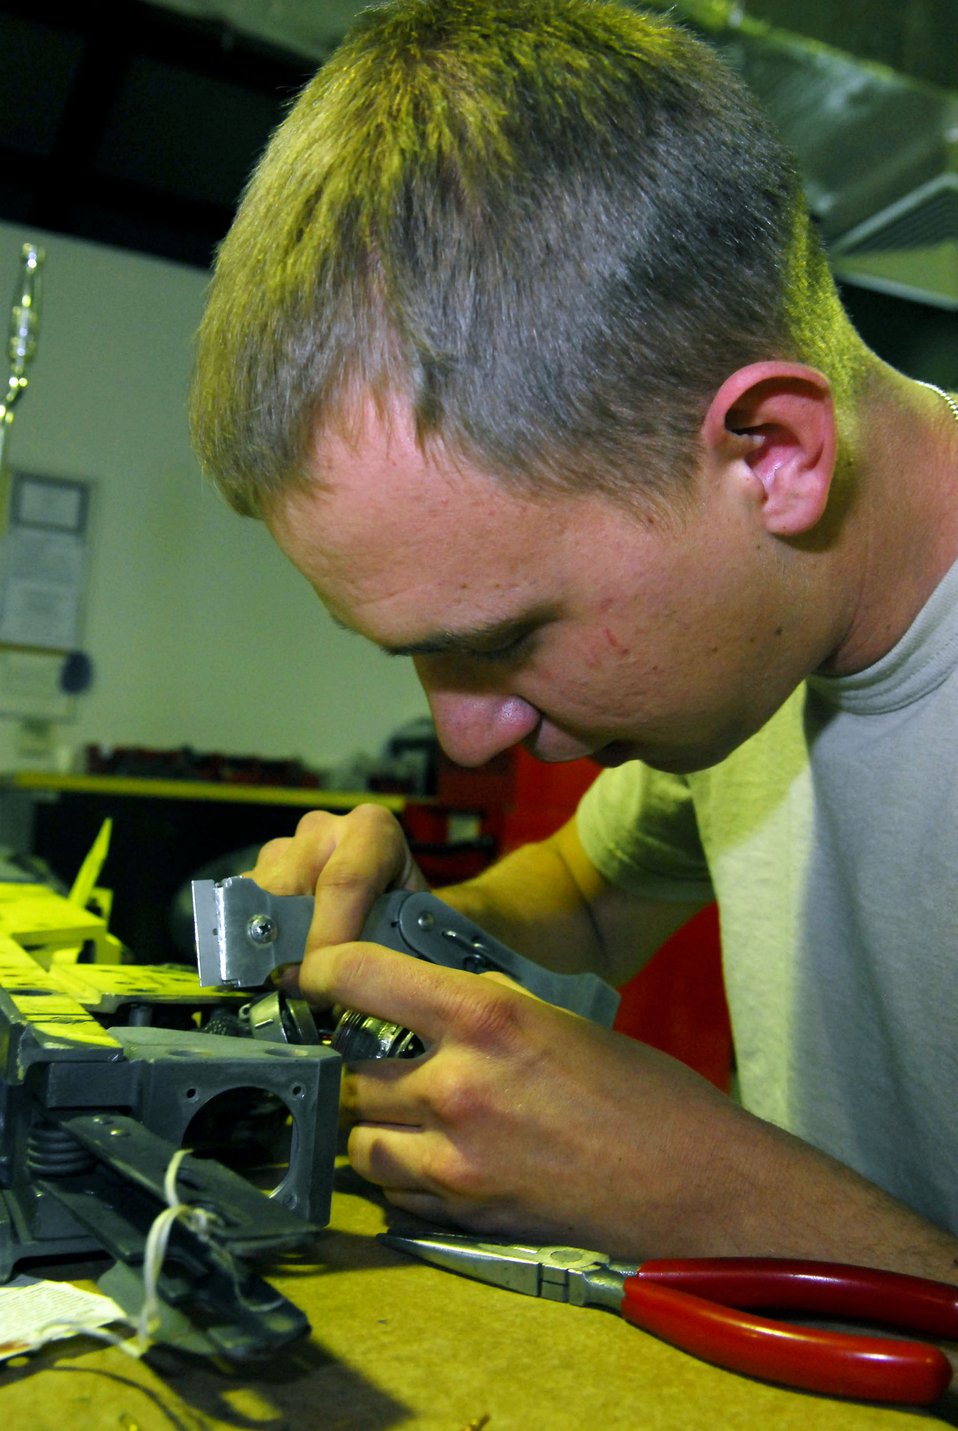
Weapons check

Airman 1st Class Chris Puzan repairs the electrical connector of a S2-10 missile launcher for the F-16 Fighting Falcon Dec. 28 at Balad Air Base, Iraq. The electrical connector is the interface between the launcher and the missile itself. Airman Puzan, a 332nd Expeditionary Maintenance Squadron armament systems technician, is deployed from Spangdahlem Air Base, Germany.